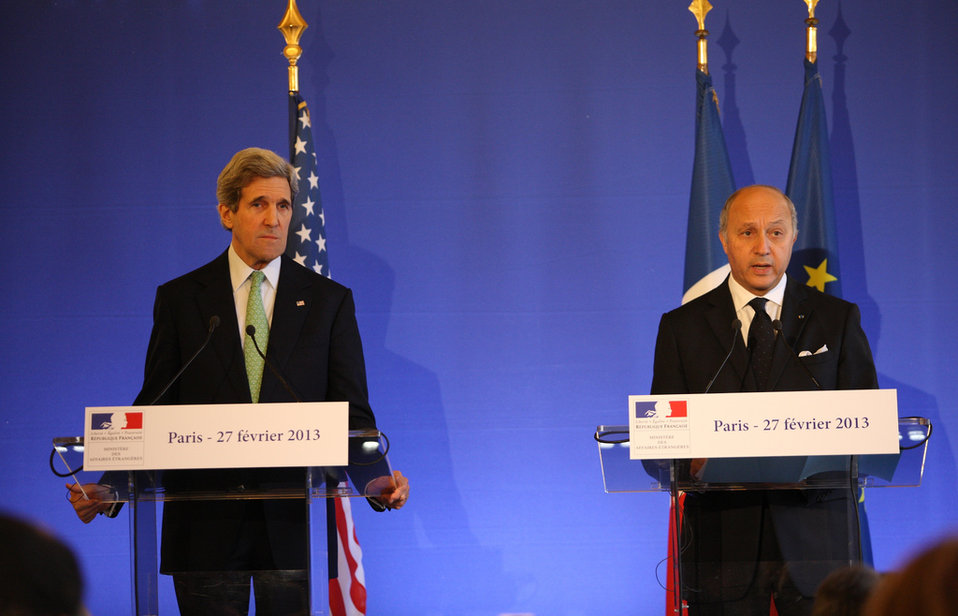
Secretary Kerry and French Foreign Minister Fabius Address Reporters

U.S. Secretary of State John Kerry and French Foreign Minister Laurent Fabius hold a joint press conference after their working lunch in Paris, France, February 27, 2013.